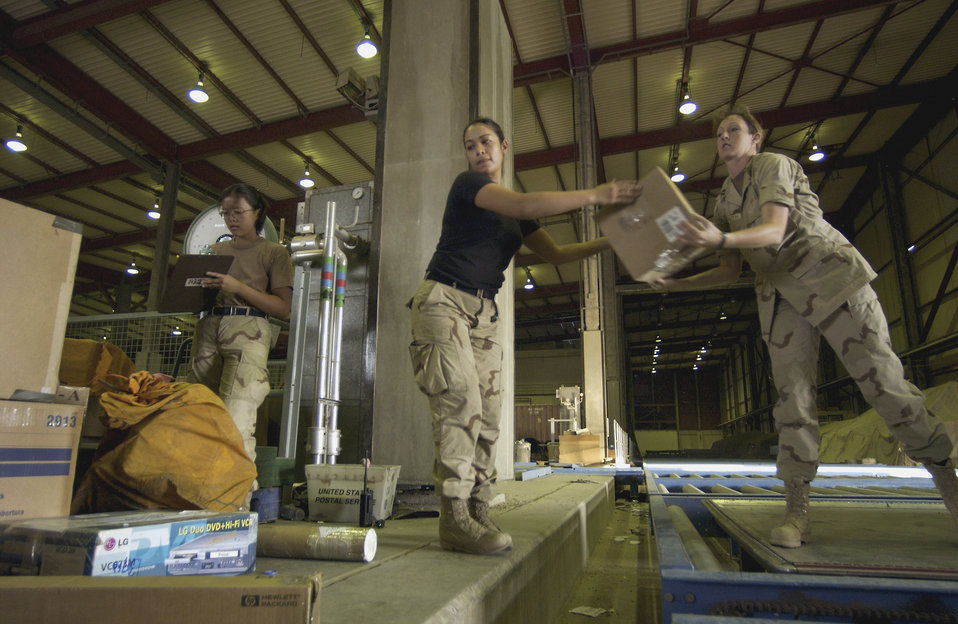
Postal handlers

BAGHDAD INTERNATIONAL AIRPORT, Iraq -- Airman 1st Class Christine Mayor, Senior Airman Alaine Wallace and Capt. Denise Freimuth load mail onto pallets in 100-plus degree temperatures. The 447th Expeditionary Communications Squadron team handles more than 150,000 pounds of mail flowing to and from air post offices at American camps in Iraq every day.